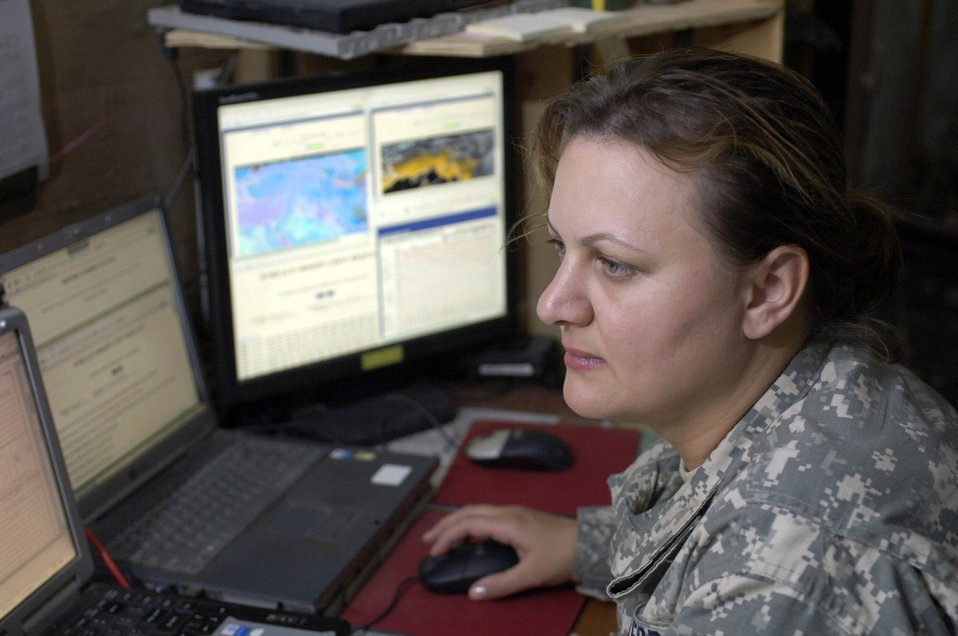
Weather team acclimates to mission in southern Baghdad

Tech. Sgt. Andrea Patterson monitors multiple weather tracking systems in the 2nd Battalion, 3rd Combat aviation Brigade, 3rd Infantry Division, tactical operations center June 23 at Forward Operating Base Kalsu, Iraq. Sergeant Patterson and two other Air Force weather forecasters provide 24-hour-a-day weather updates to the Army 3rd Infantry Division's operations occurring in the Triangle of Death area. The instantaneous weather information the battlefield weathermen are able to provide are critical to the success, and to the safety of the 3rd ID's ground and aviation operations. Though Sergeant Patterson is attached to the 3rd ID, she officially falls under the recently formed 3rd Expeditionary Weather Squadron headquartered on Camp Victory in Iraq. She is deployed from Detachment 6 of the 7th Weather Squadron from Wiesbaden, Germany.